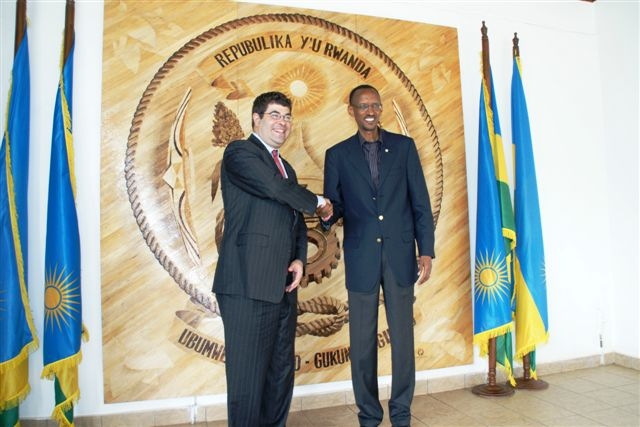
Deputy Secretary Neal Wolin’s trip to Africa 2009

Deputy Secretary Wolin and Rwandan President Paul Kagame following a meeting to discuss the impact of the global financial crisis on Rwanda and ways in which Rwanda and the U.S. can continue to partner on food security, agricultural development, and financing for key infrastructure.